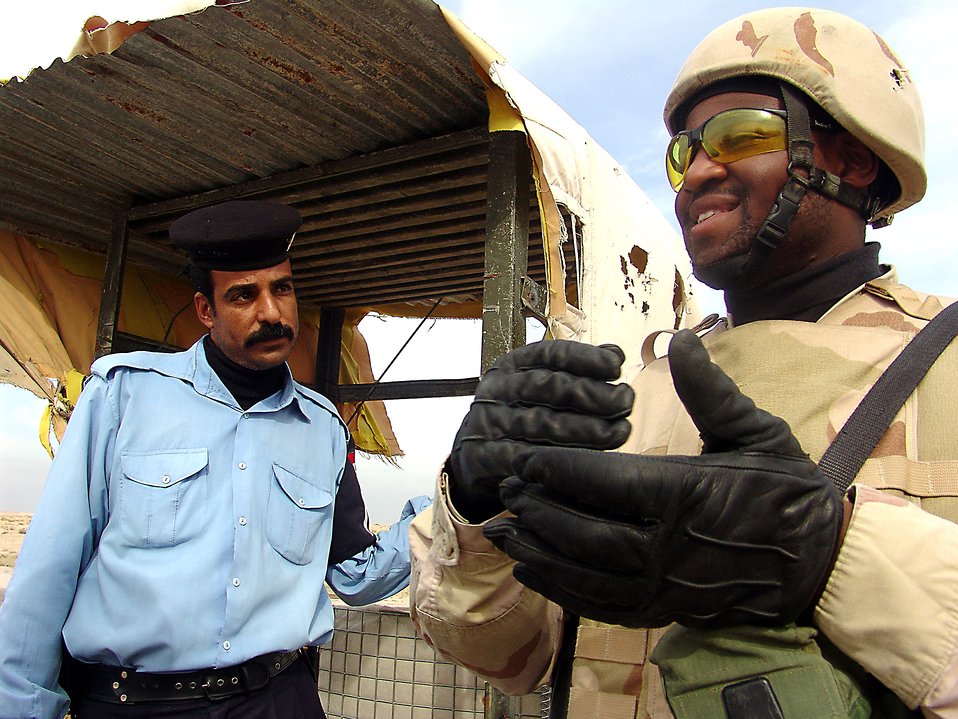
Airmen outside the wire

CAMP BUCCA, Iraq (AFPN) -- Senior Airman Kenneth Graham talks with Iraqi police during an area security operation. More than 750 Airmen are deployed here providing security for convoys, the base and the Theater Internment Facility. Airman Graham is a truck commander with the 586th Expeditionary Security Forces Squadron.